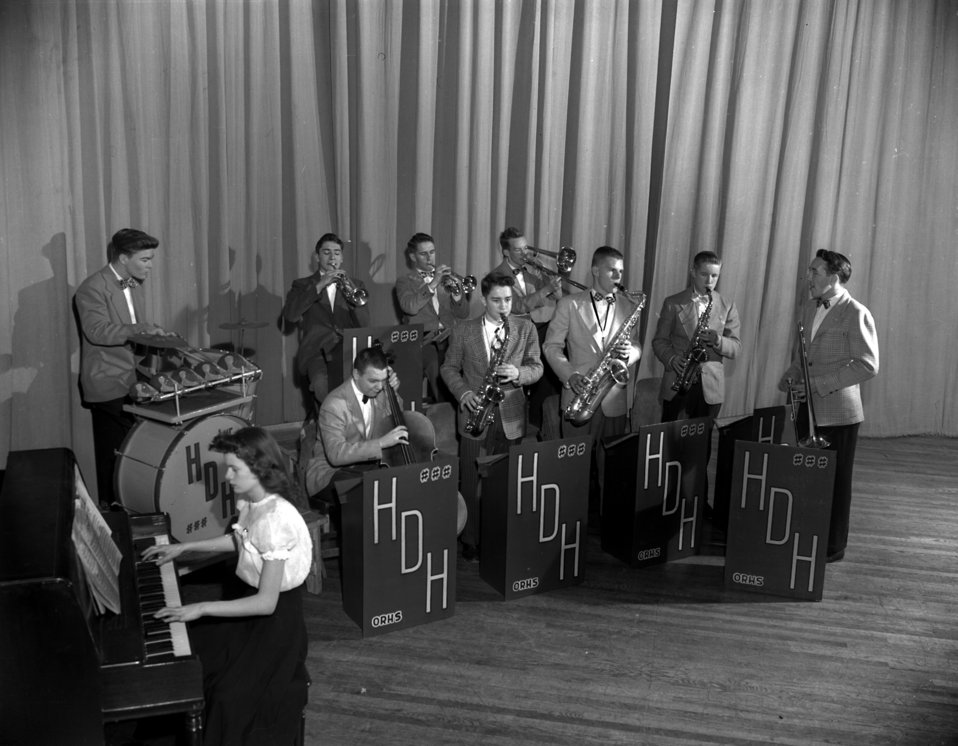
High School Orchestra

004321 DOE photo by Ed Westcott
Oak Ridge Tennessee Feb. 1948